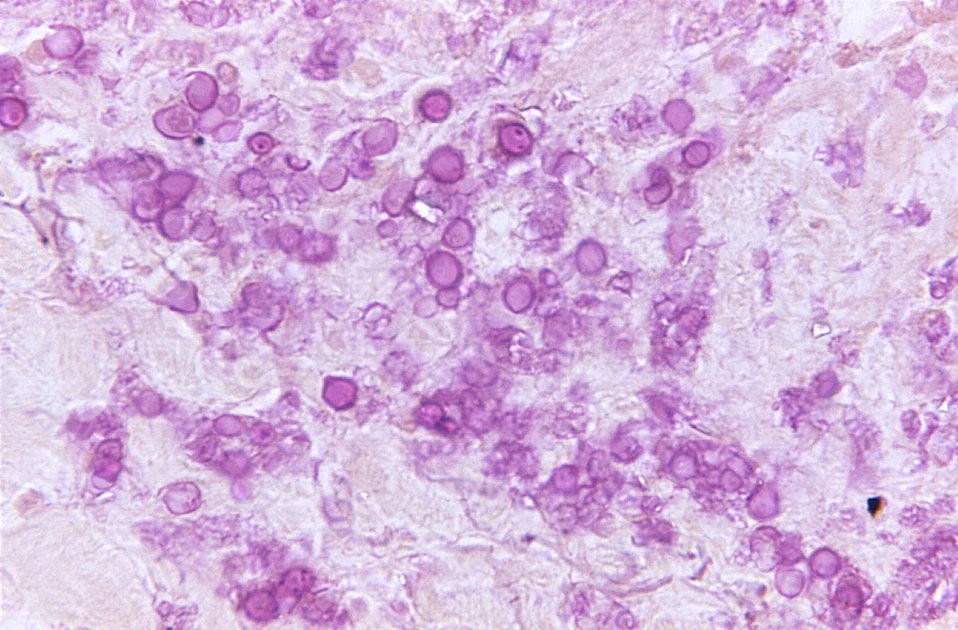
Under a magnification of 500X, this PAS-stained (periodic-acid-Schiff) photomicrograph of a primate tissue sample, revealed some of the histopathologic cytoarchitectural changes associated with what was determined to be a case of lobomycosis due to the fungus, Lacazia loboi, formerly known as Loboa loboi.